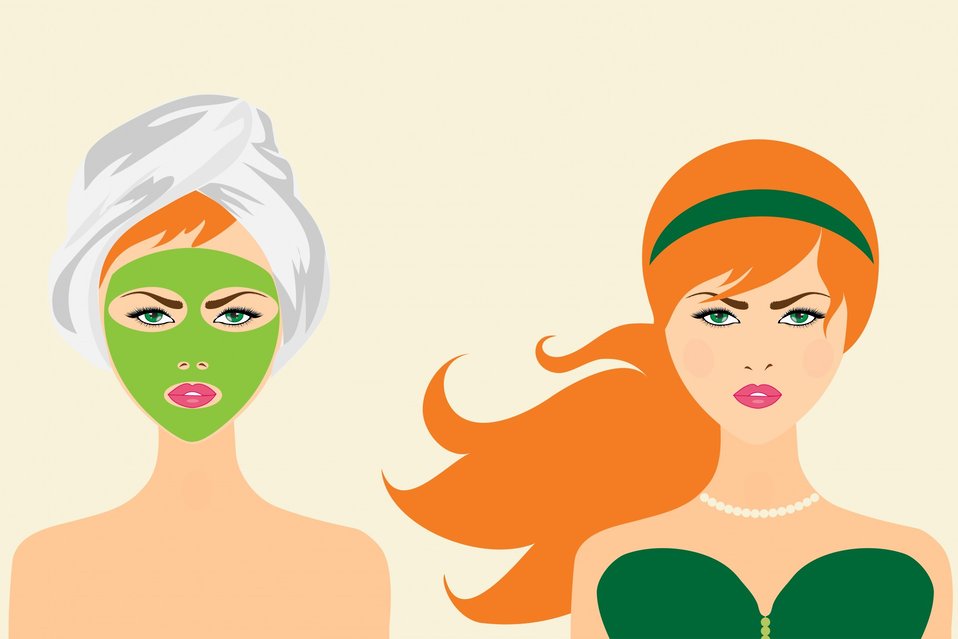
Woman with face mask

Beautiful redhead with face mask before and after beauty treatment.